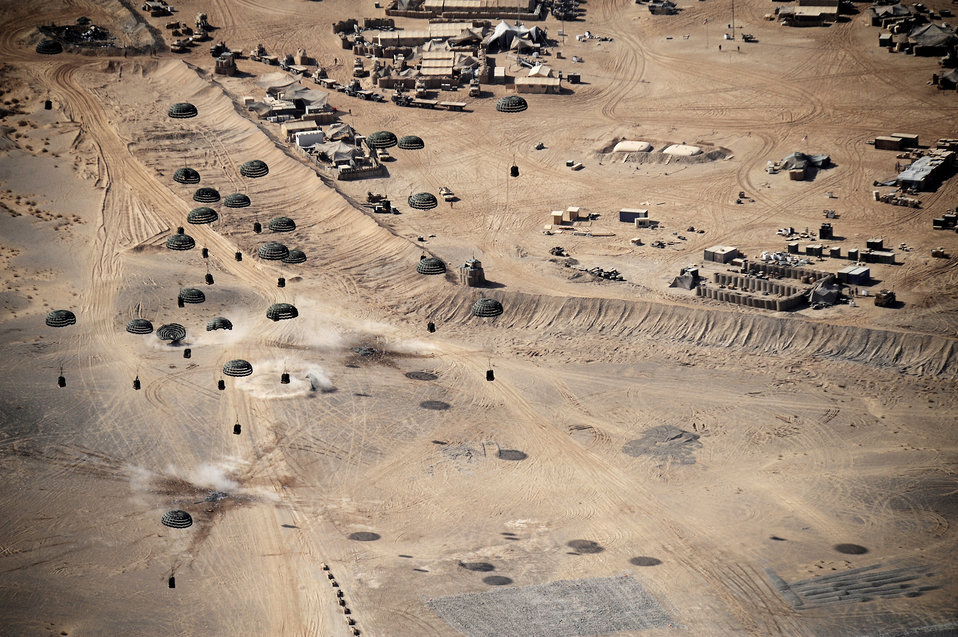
Mobility Airmen continue to deliver for warfighters

Container delivery system bundles dropped from a C-17 Globemaster III touch down Sept. 23, 2009, outside a forward operating base in Afghanistan. More than 4 million pounds of supplies were delivered by the Air Force via airdrop in the month of September.